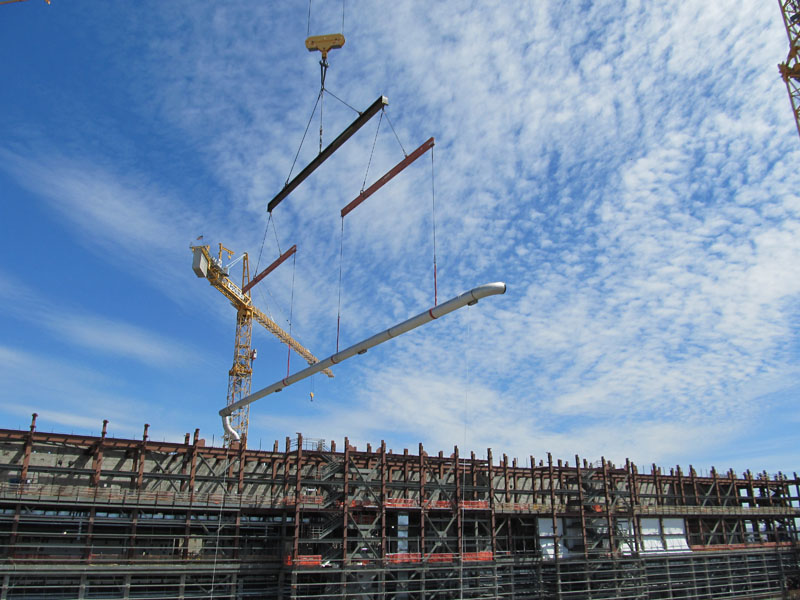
A 140-foot long pipe spool is crane-lifted into the High-Level Waste Facility filter cave